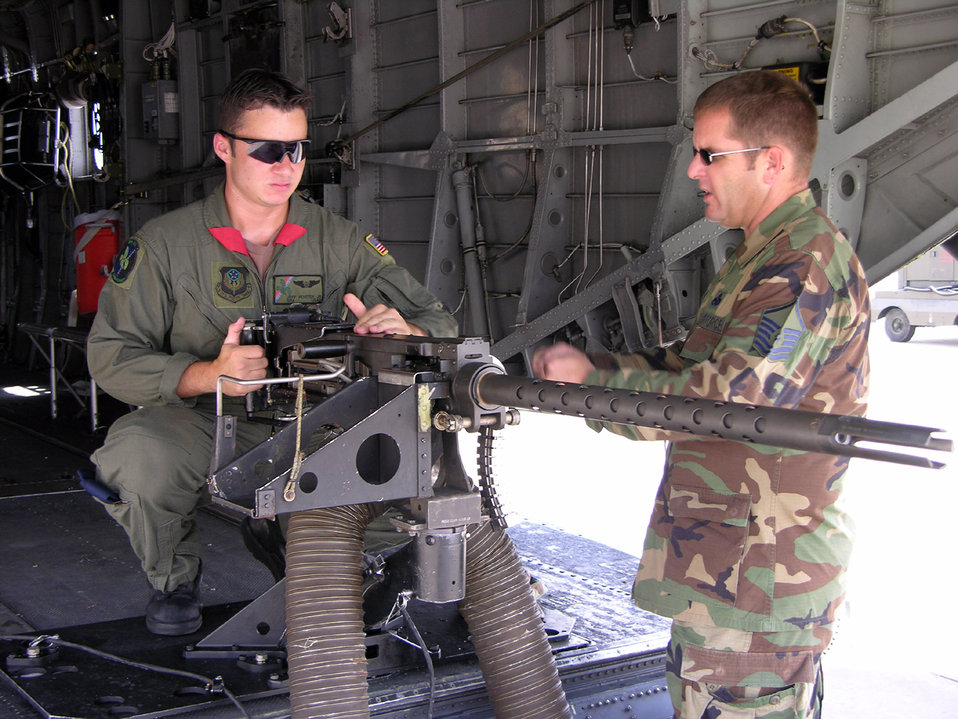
Like father, like son

HURLBURT FIELD, Fla. -- Senior Airman Jeffrey Porter shows his father, Master Sgt. Jeffrey Porter, how a .50 caliber machine gun works. Airman Porter is a gunner with the 20th Special Operations Squadron, and Sergeant Porter is a radio maintainer with the 720th Operations Support Squadron.